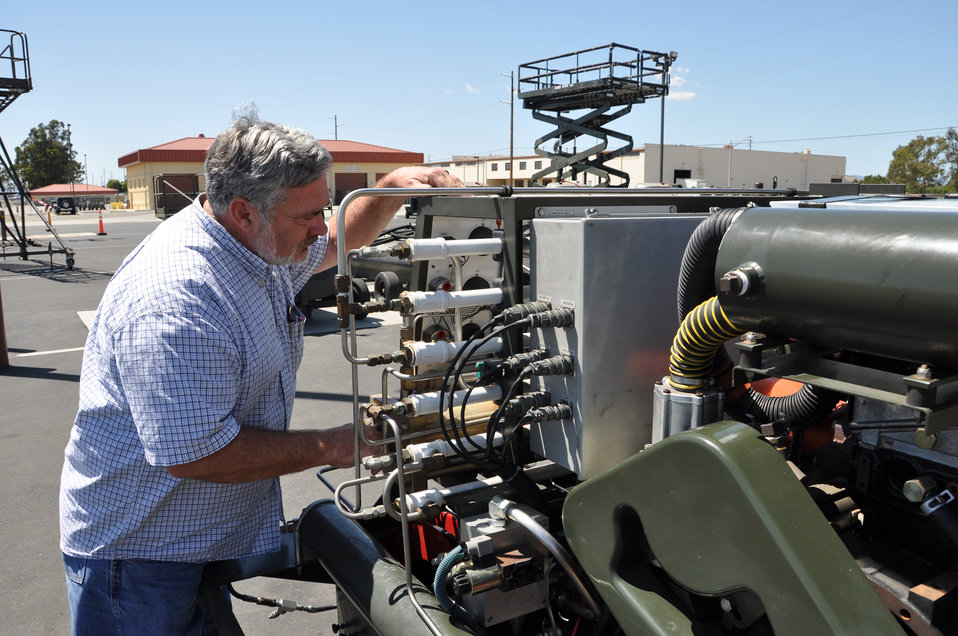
AGE technician earns $30k for innovation

Robert Rayborn inspects a nitrogen cart May 11, 2011 at Travis Air Force Base, Calif. Mr. Rayborn also submitted a suggestion about the nitrogen tanks to the Zero-Overpriced Program, which resulted in the goverment saving nearly $600,000 in the first six months. Mr. Rayborn is an aerospace ground equipment technician at the 60th Maintenance Squadron.